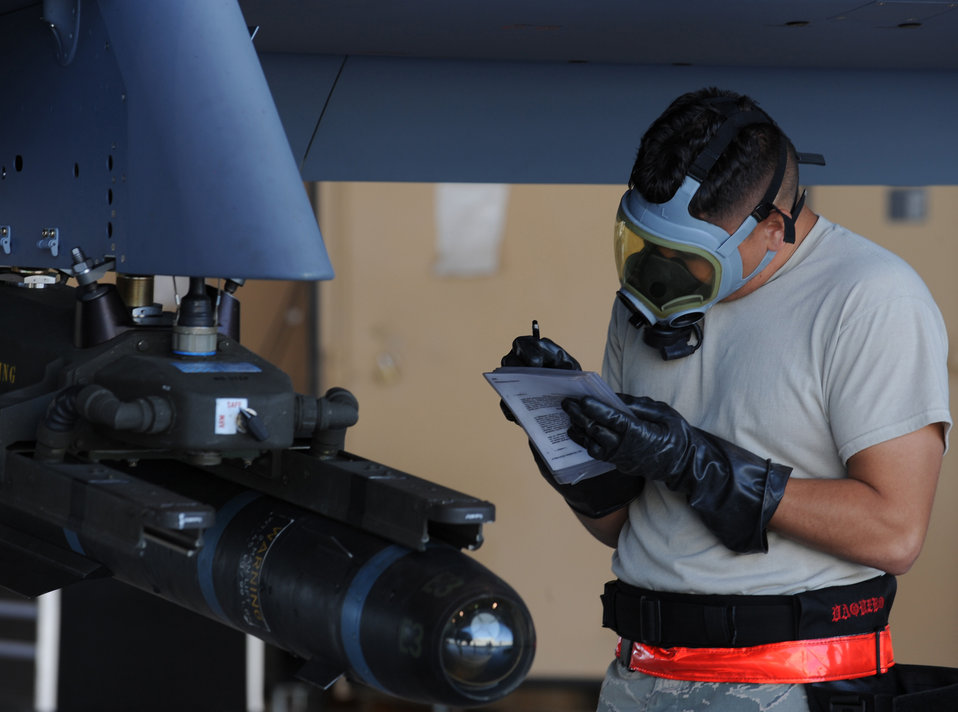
Training for unmanned aircraft systems

Staff Sgt. Bobby Domanski double checks an AGM-114 Hellfire II air-to-ground missile during weapons load training April 22 at Creech Air Force Base, Nev. Predator load crewmembers were conducting monthly training to maintain their qualifications on the airframe. Sergeant Domanski is a Reaper weapons loader assigned to the 432nd Aircraft Maintenance Squadron.